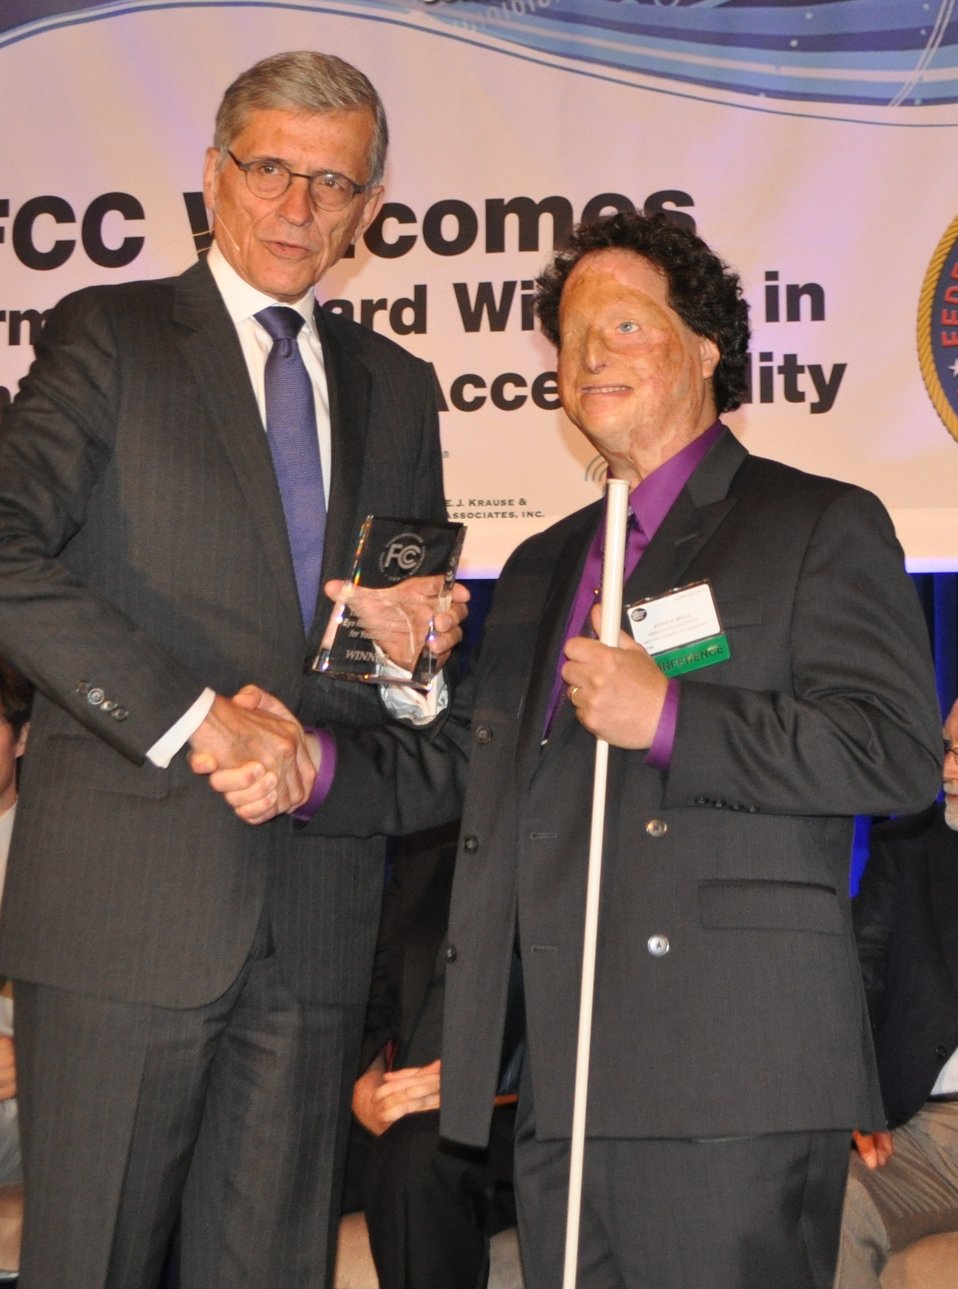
6.9.2014 Third Annual Chairman’s Awards for Advancement in Accessibility

Winner for the category of Video Description: YouDescribe and The Descriptive Video Exchange: Dr. Joshua A. Miele accepting the award.